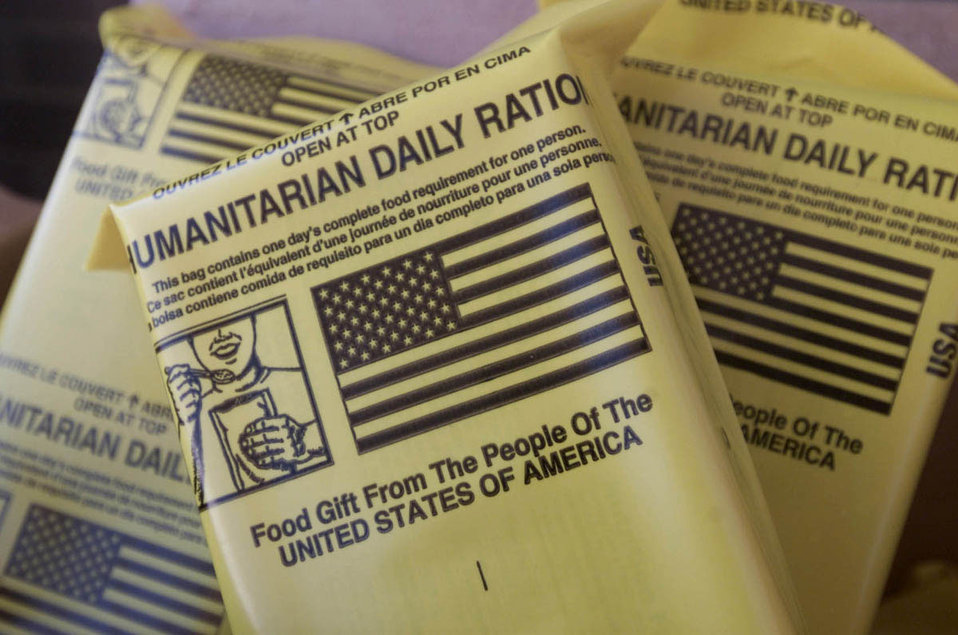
Humanitarian daily rations

FILE PHOTO -- Airmen are delivering tons of relief supplies, like the daily rations pictured, into poverty-stricken areas of Afghanistan. The humanitarian relief effort, part of Operation Enduring Freedom, kicked into high gear recently when four C-17 Globemaster III aircrews delivered about 70,000 meals in one evening.